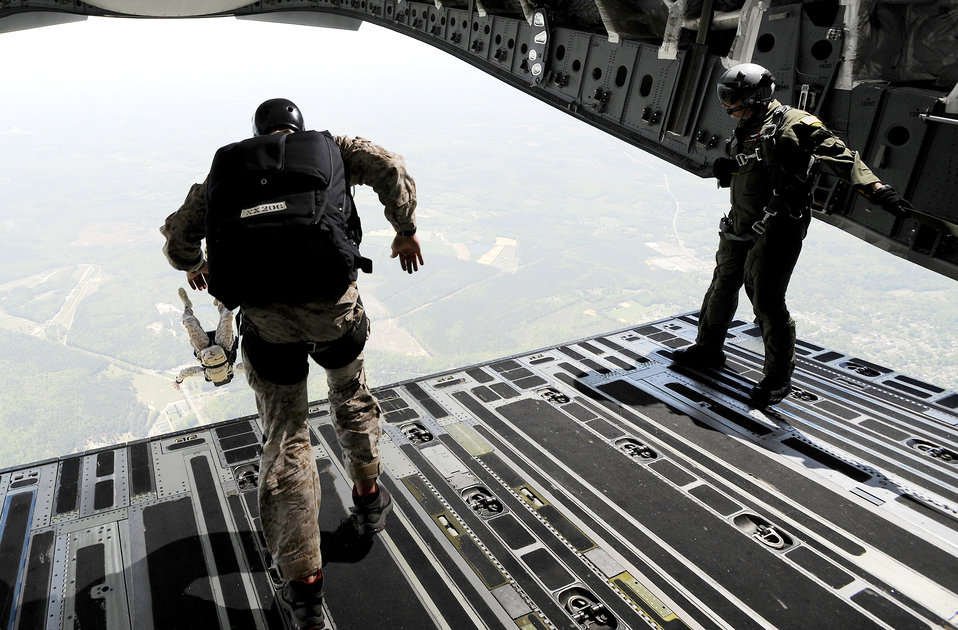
Joint training at 12,500 feet

Navy SEALs jump from the ramp of a C-17 Globemaster III April 15, 2010, over Fort Pickett Maneuver Training Center, Va., as Tech. Sgt. Justin Mulder watches. The jump was part of joint training exercise with 517th Airlift Squadron members from Elmendorf Air Force Base, Alaska. Sergeant Mulder is a loadmaster with the 517th Airlift Squadron.